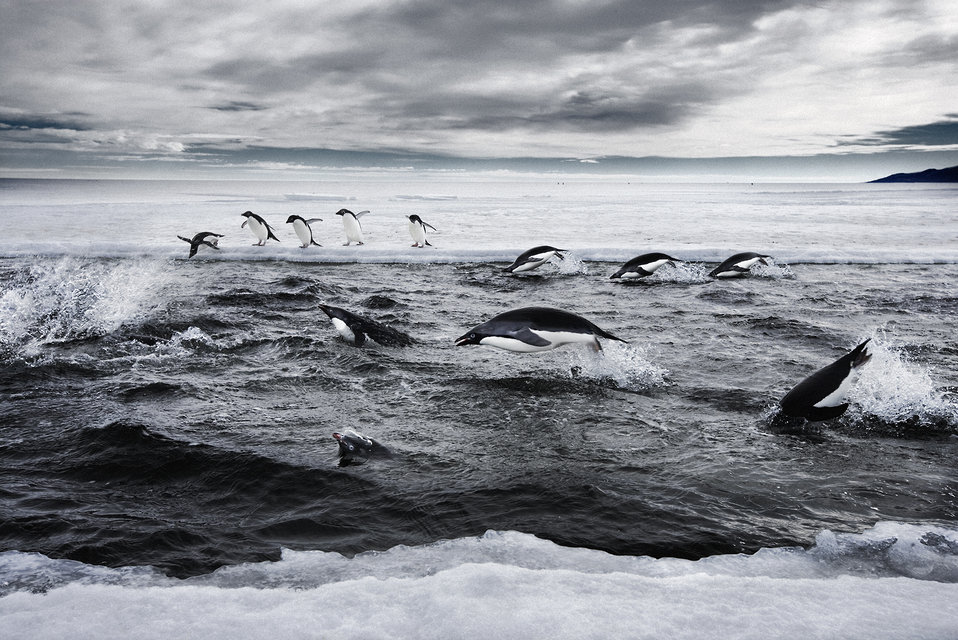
Adelie penguins explode from the water like corks, crashing onto the floating ice. Adelies nest on Antarctica's few patches of bare ground, and some colonies date back thousands of years, 2008. [John B. Weller photo, courtesy of The Pew Charitable Trusts]